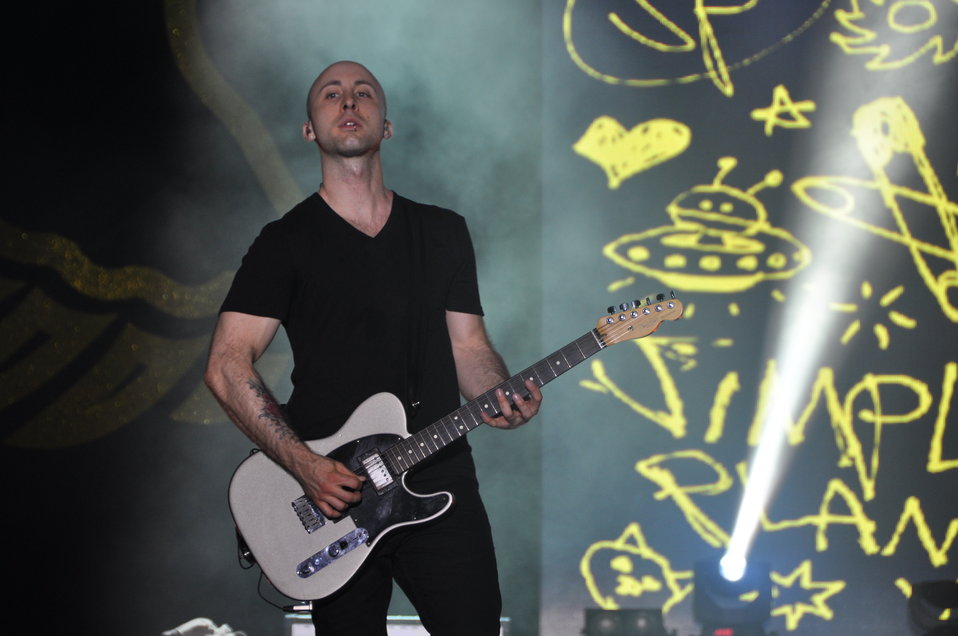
USAID co-sponors MTV EXIT concert in Hanoi against human trafficking

USAID co-sponsors MTV EXIT concert, campaign against human trafficking